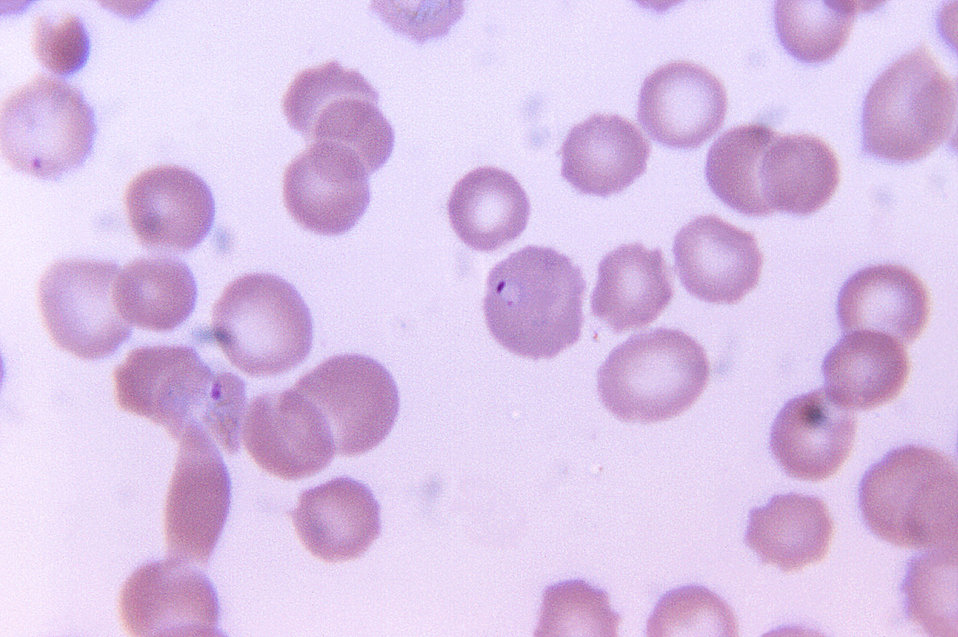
This blood smear micrograph depicts P. vivax, but is poorly stained, and does not properly reveal Sch�'s dots.